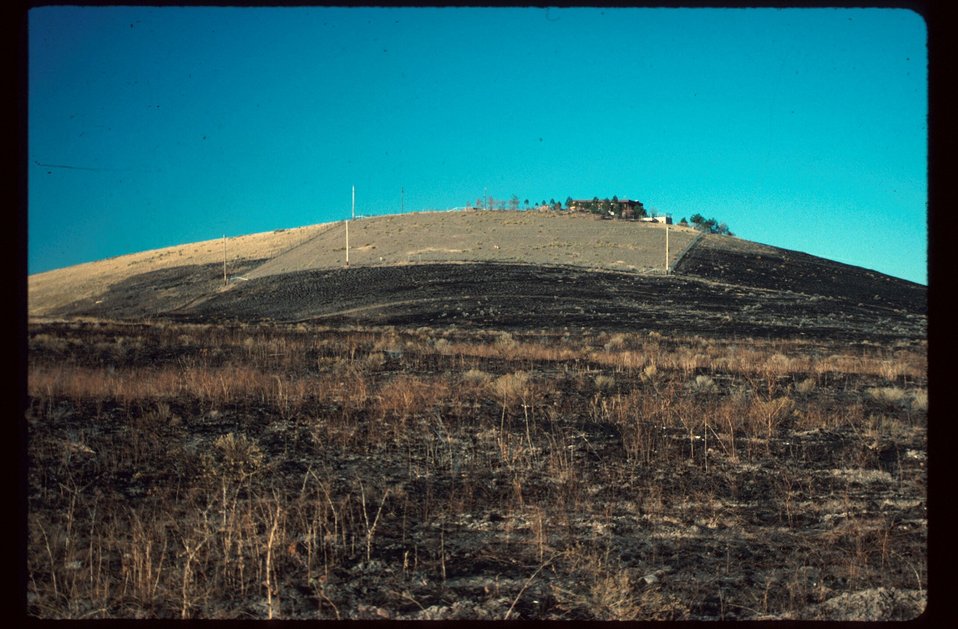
Fire Range Restoration Project